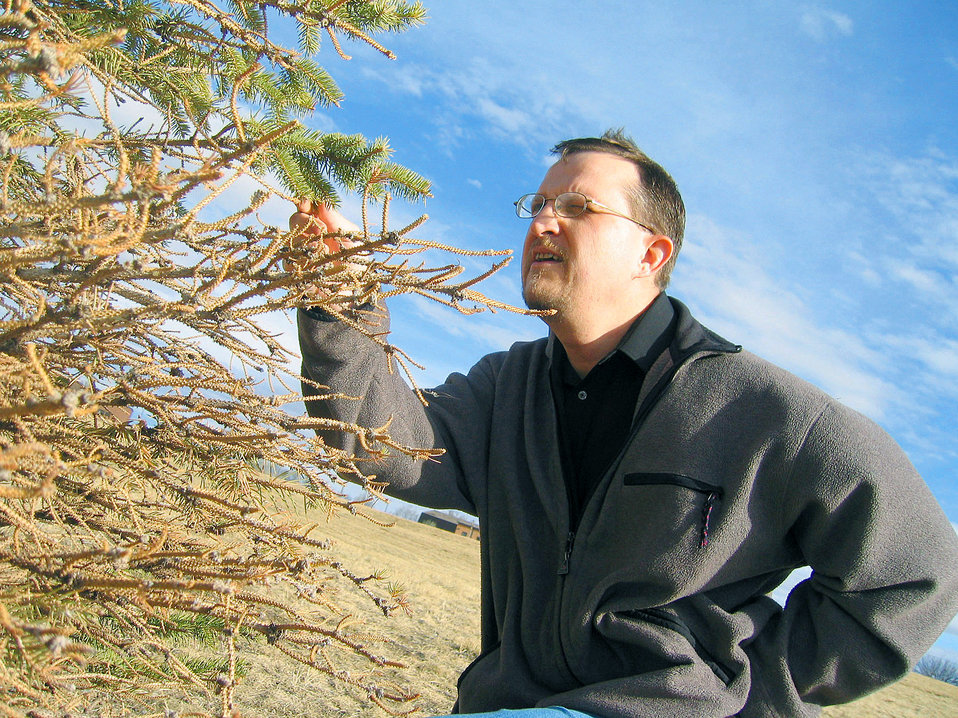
Recycled Christmas tree

ELLSWORTH AIR FORCE BASE, S.D. -- Greg Johnson checks a spruce tree's condition at the northern end of the greenway here Nov. 20. The tree was planted by airmen from the 28th Civil Engineer Squadron after using it as their squadron Christmas tree in 2002. Johnson is the environmental planning chief for the 28th CES.